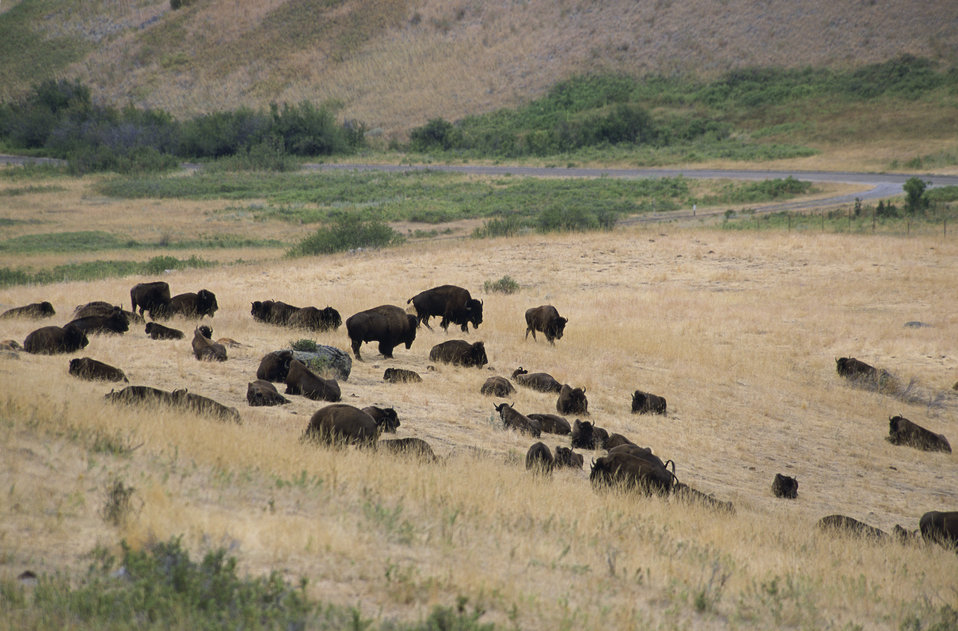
Bison on a prairie

The National Bison Range is administered by the U.S. Fish and Wildlife Service as part of the National Wildlife Refuge System. It was established in 1908 and is one of the oldest Wildlife Refuges in the nation. A large portion of the 18,500 acre Range consists of native Palouse prairie.